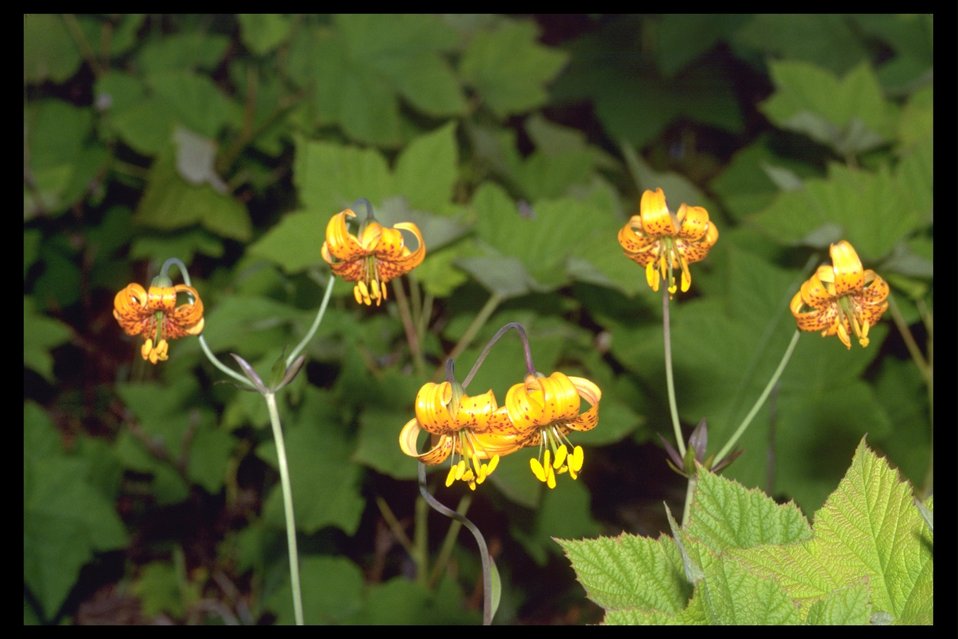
Tiger Lily (Lilium columbianun) at Upper Trail Creek.